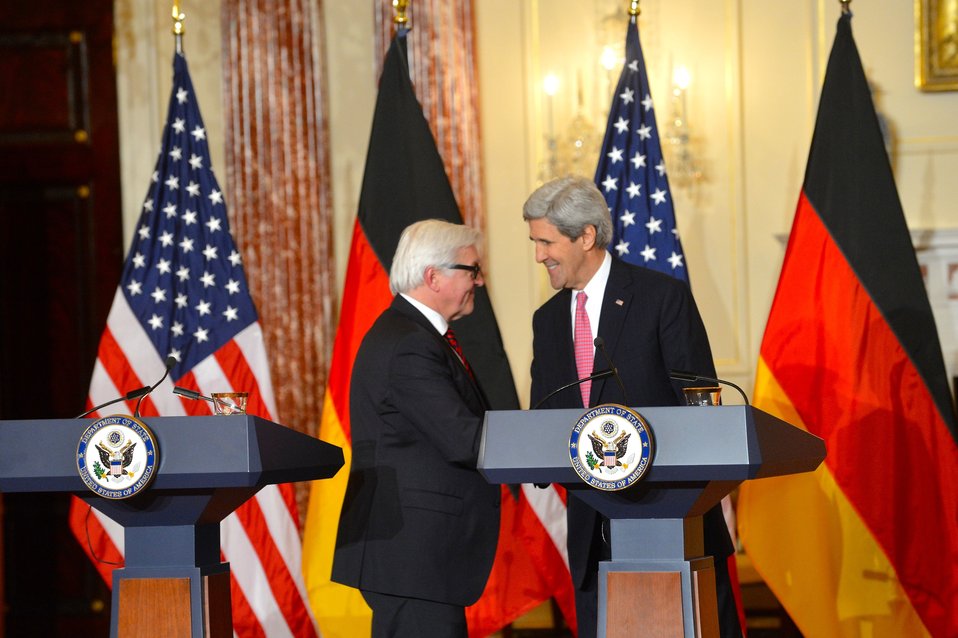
Secretary Kerry and German Foreign Minister Steinmeier Address Reporters

U.S. Secretary of State John Kerry Kerry and German Foreign Minister Frank-Walter Steinmeier address reporters after their working lunch at the U.S. Department of State in Washington, D.C., on February 27, 2014.